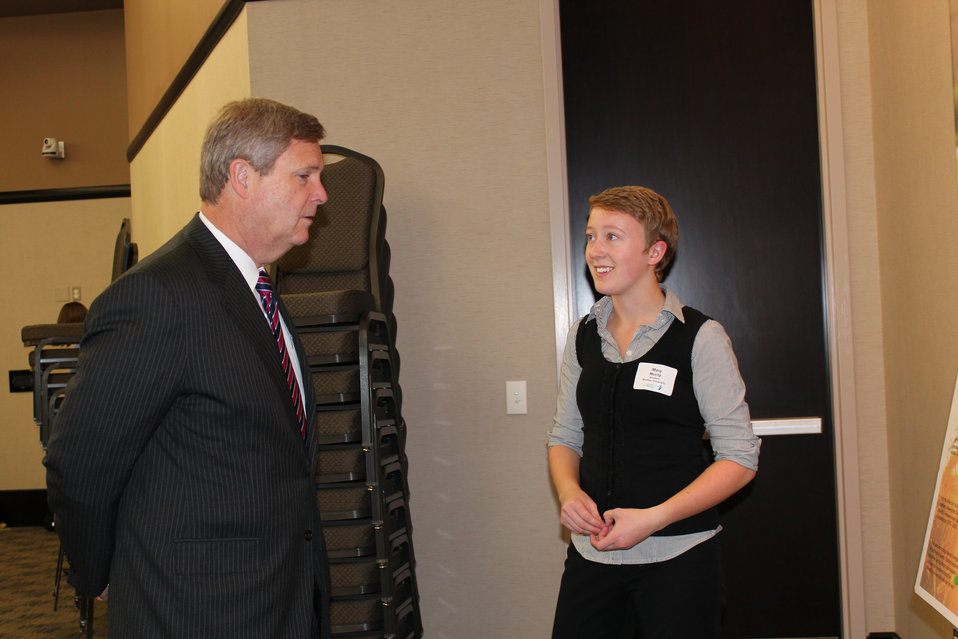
Agriculture Secretary Tom Vilsack visits with Bradley University engineering student, Mary Moritz, about her project, at the Future of Midwest Agriculture and Environmental Sustainability symposium on Thursday, Nov. 3, 2011, at Bradley University in Peoria, IL.